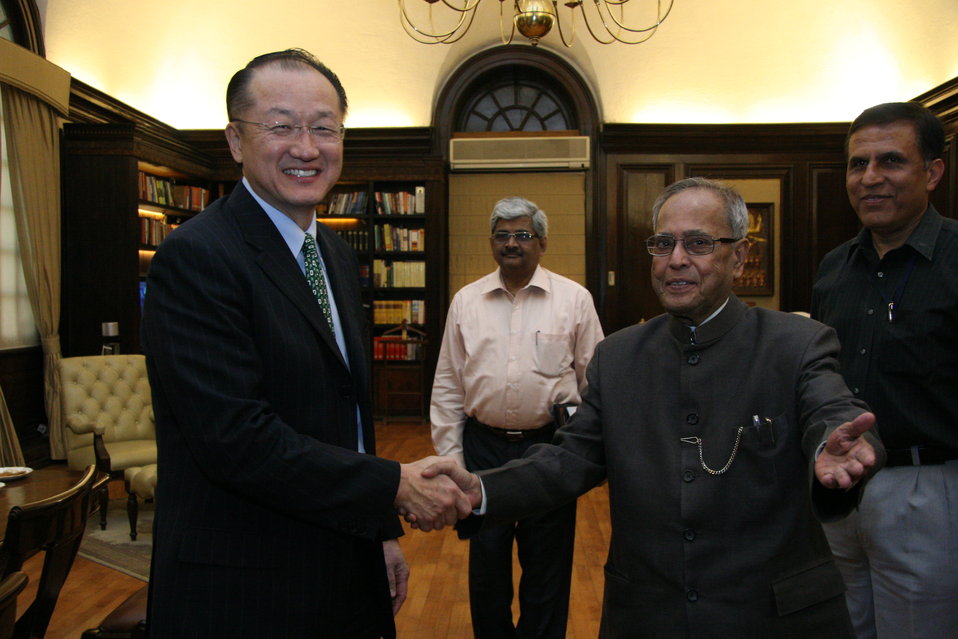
Dr. Jim Yong Kim Meeting with Indian Finance Minister Pranab Mukherjee

Dr. Jim Yong Kim met in New Delhi on April 3 with Indian Finance Minister Pranab Mukherjee. They discussed the important role of the World Bank in promoting global growth and helping developing countries protect against external shocks.